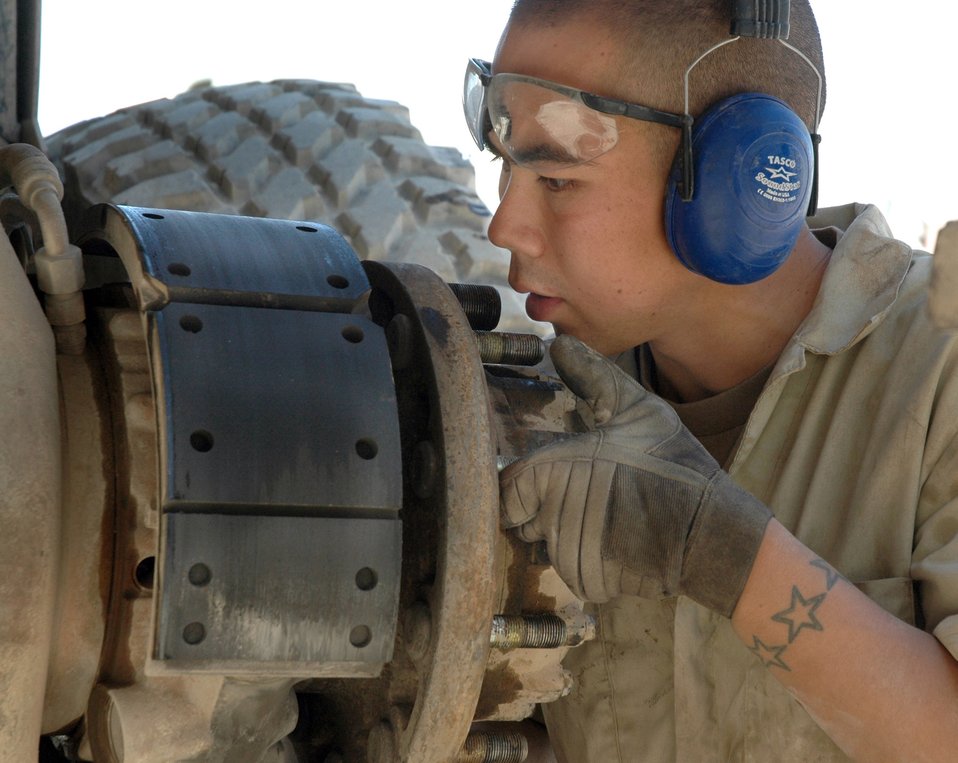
Mechanics turn wrenches to save lives

TIKRIT, Iraq (AFPN) -- Staff Sgt. Jason Gregg inspects an antilock-brake-system sensor on an M-1083 medium tactical vehicle. Mechanics assigned to the 732nd Expeditionary Logistics Readiness Squadron at base Speicher maintain armored gun trucks used by the Air Force convoy security detachment. Sergeant Gregg deployed from Misawa Air Base, Japan.